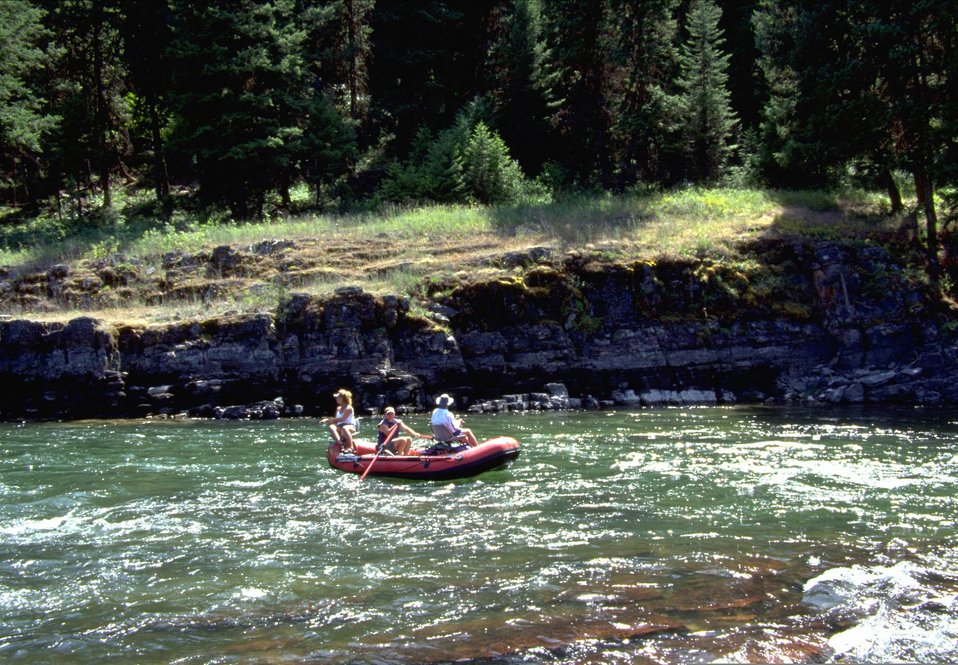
Blackfoot rafters